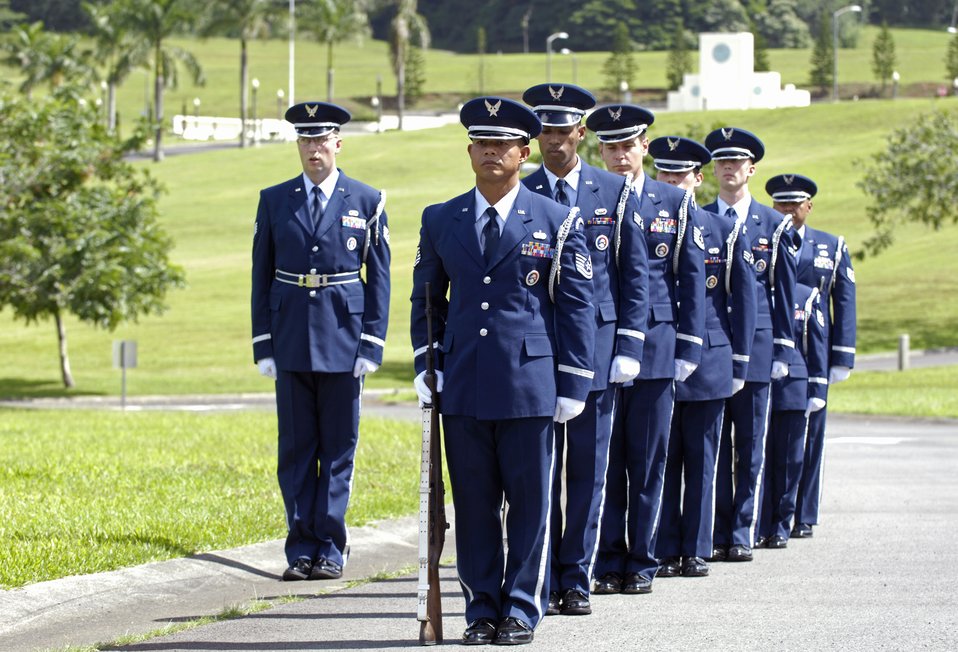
Rendering military honors for a veteran

Members of the 15th Airlift Wing Honor Guard at Hickam Air Force Base, Hawaii, line up for a firing party Oct. 26 during a veteran's funeral at Hawaii Veterans Cemetery. The base honor guard is rendering military honors to the veteran and his family.